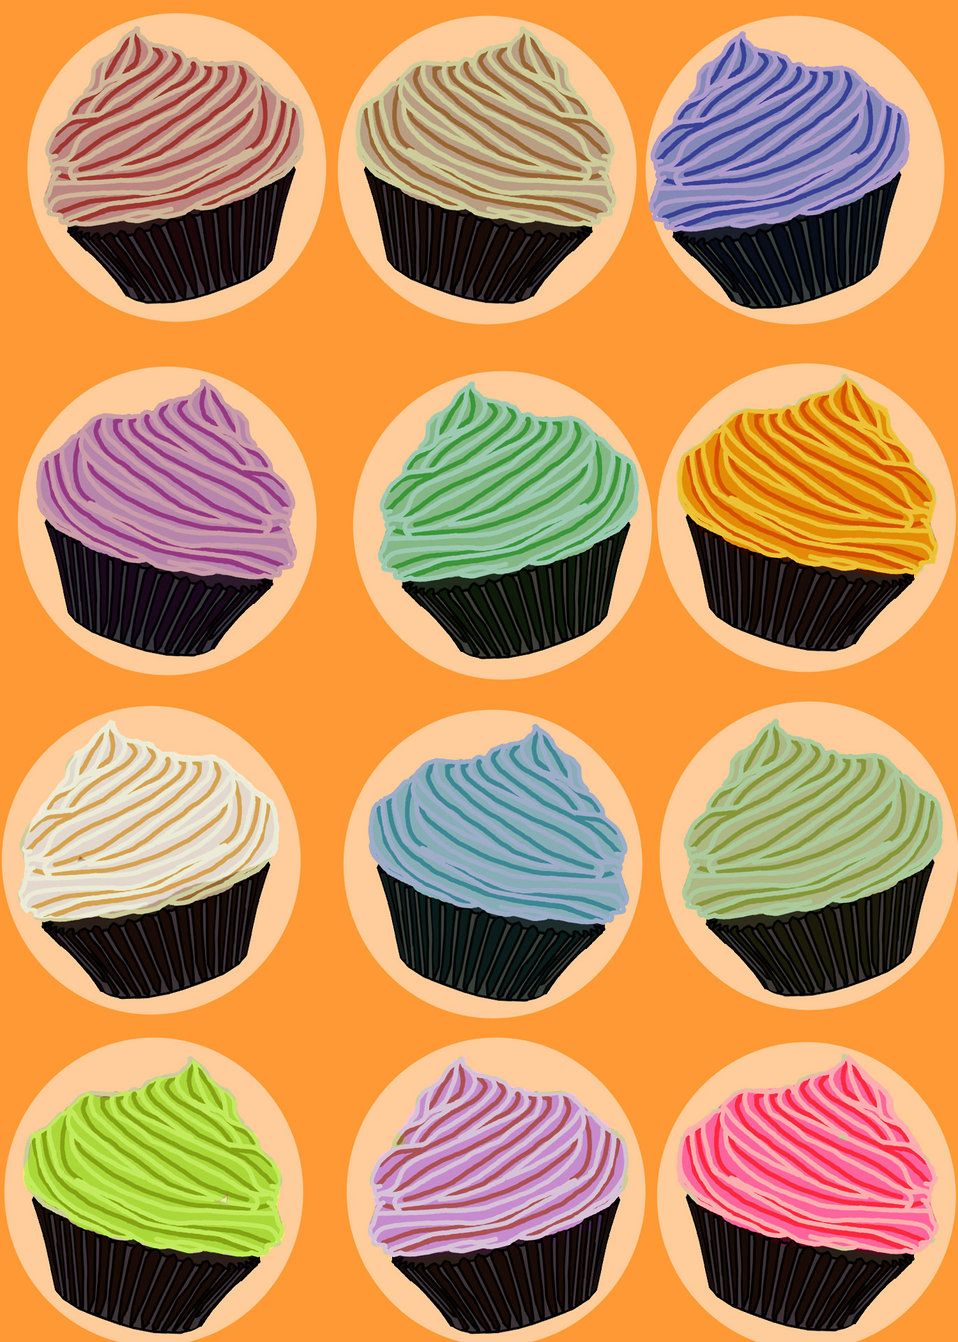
Cupcake flavors background.